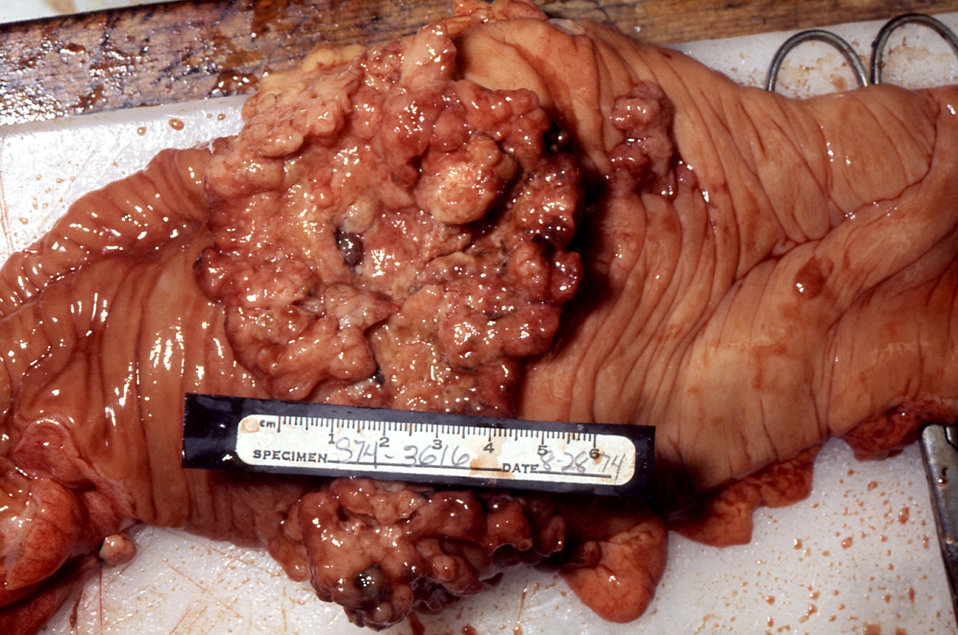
Gross pathology of a surgical specimen revealing exophytic adenocarcinoma, of the colon